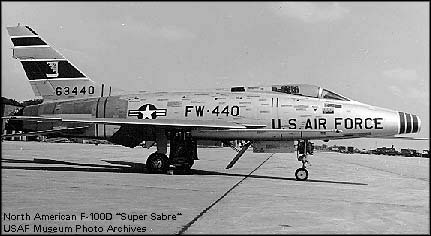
F-100D Super Sabre

A F-100D Super Sabre, assigned to the 31st Fighter Wing, is ready for flight on the Toul Air Base, France, flightline in the summer of 1959.